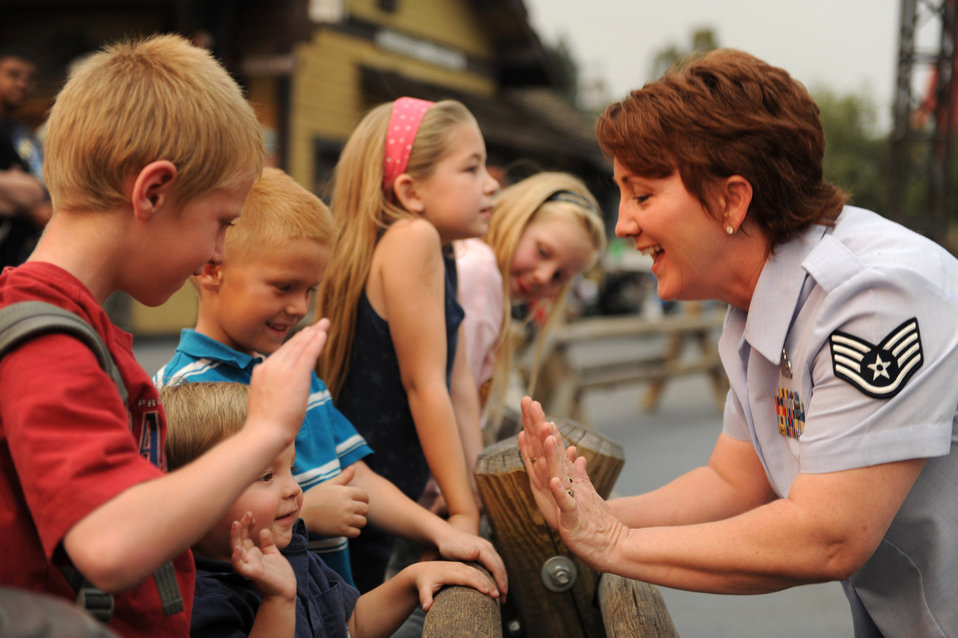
Bands spread Air Force message through music

Staff Sgt. Erin McPherson high-fives children at Knott's Berry Farm Nov. 15 in Los Angeles. Sergeant McPherson is a vocalist of the Air National Guard Band of The Southwest. The band is performing during Air Force Week Los Angeles, which is an event designed to educate the local population about the Air Force's capabilities and missions through various activities and exhibitions all over the Los Angeles area.